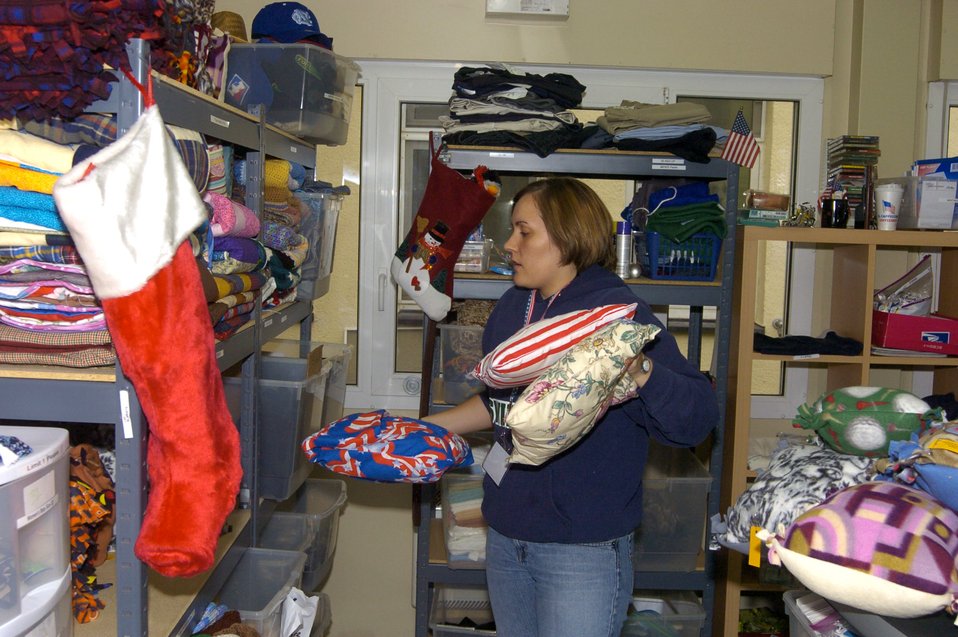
Holiday generosity in motion for wounded warriors

Jenny Clayton stocks shelves at the Wounded Warrior Ministry Center at Landstuhl Regional Medical Center, Germany, which is benefiting from a holiday increase in donations to servicemembers wounded downrange. Ms. Clayton is one 22 volunteers who donate more than 600 hours a month at the center.